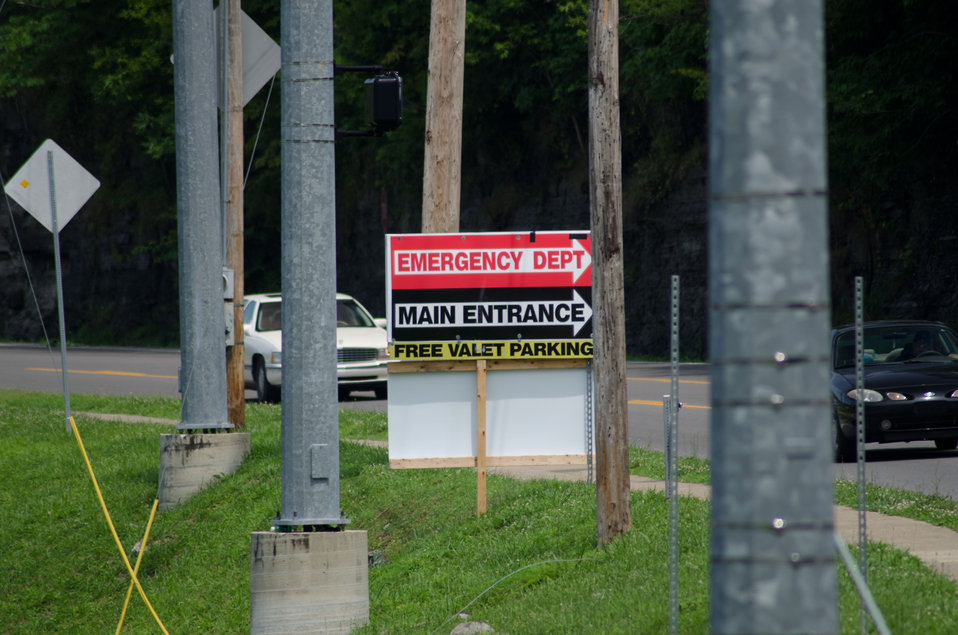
Detour, arrow, construction and temporary signs are posted on and across the re-utilized buildings and properties at various ends of multiple parking lots are common sights at the Pikeville Medical Center on Tuesday, July 12, 2011, in Pikeville, KY. Nearby, the above ground construction phase of Pikeville Medical Center (PMC) expansion project is underway, after months of infrastructure construction and rain delays. This is one of Kentucky’s largest American Recovery and Reinvestment Act (ARRA) projects. The $44.6 million Community Facilities Loan will finance construction of a new medical office building and parking garage.